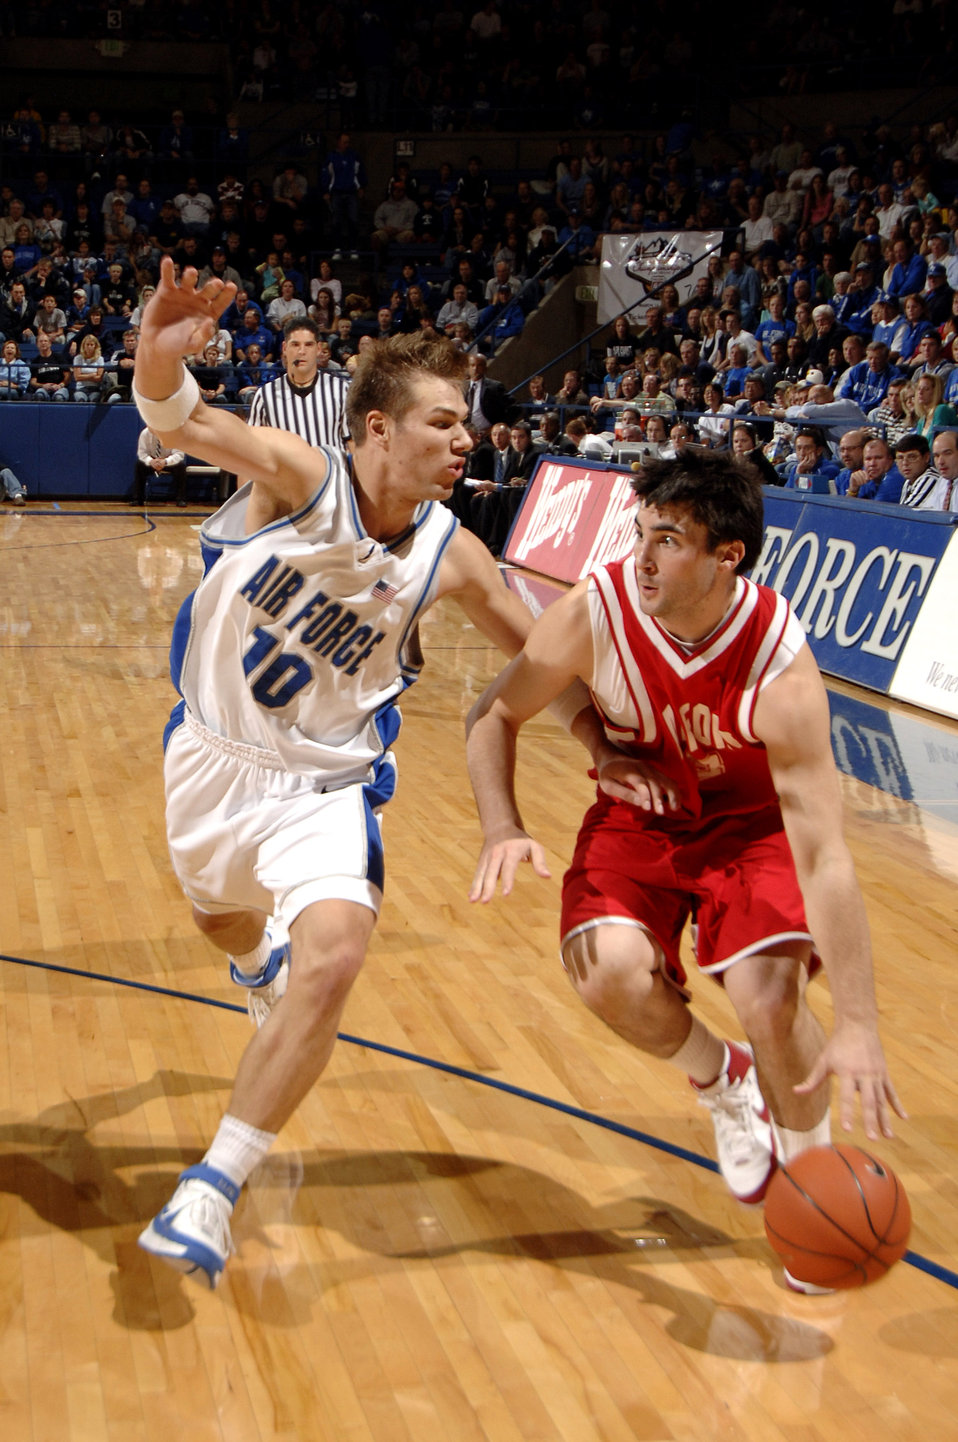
Falcons score overtime victory

Junior guard Andrew Henke applies defensive pressure as the Air Force Falcons defeated the Radford Highlanders 52-47 in overtime Nov. 19 at Clune Arena. Air Force, under first-year coach Jeff Reynolds, is 4-0 on the season.